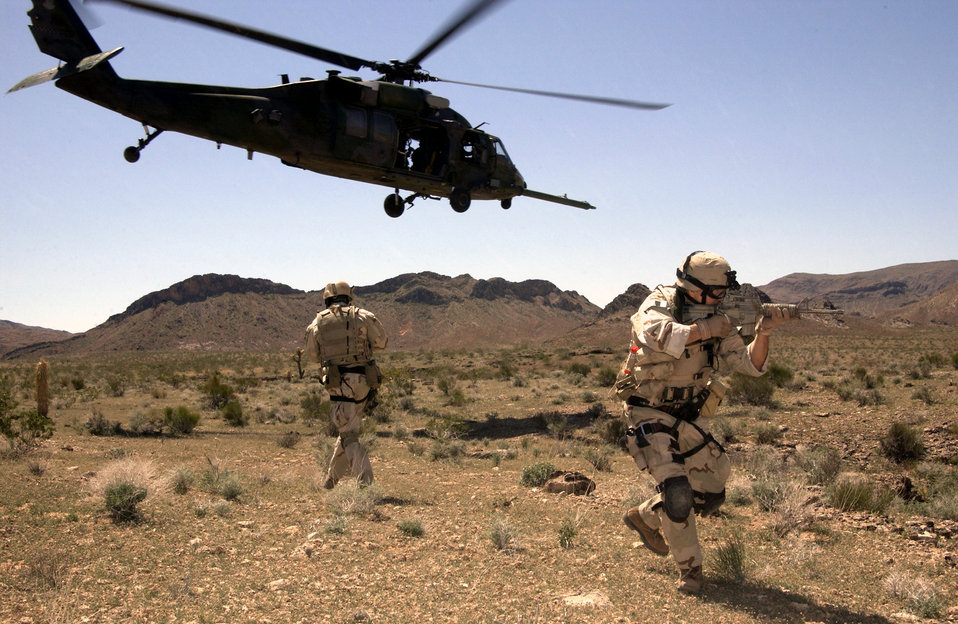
Train to fight

NELLIS AIR FORCE BASE, Nev. -- Senior Master Sgt. Paul Koester (foreground) and Staff Sgt. William Hardin, both from the 58th Rescue Squadron here provide ground cover while a HH-60G Pave Hawk from the base’s 66th Rescue Squadron prepares to land during a training mission.